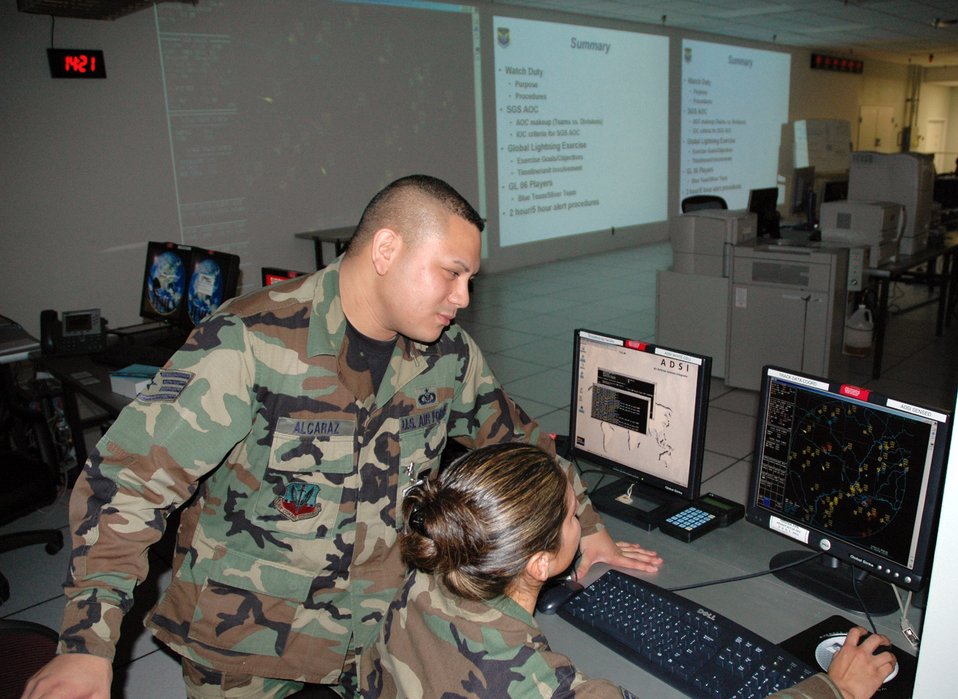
Datalink

BARKSDALE AIR FORCE BASE, La. (AFPN) -- Staff Sgts. Oliver Alcaraz and Ruby Perez review datalink information in the combined air and space operations center. Both sergeants are with the 608th Combat Operations Squadron.